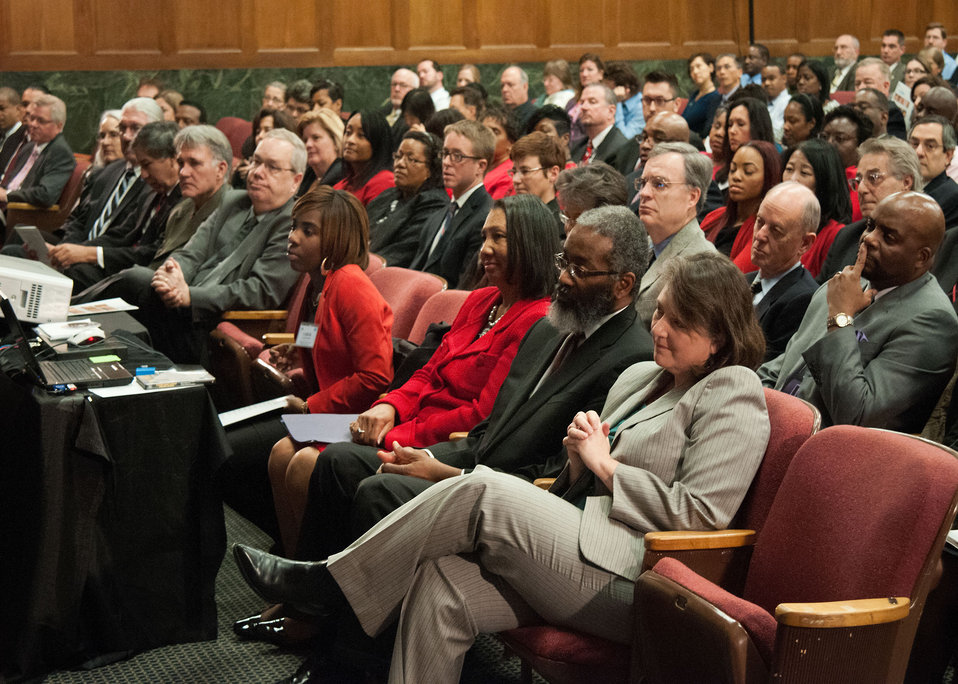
(L to R) Agriculture Associate Assistant Secretary for Administration Dr. Alma Hobbs, Agriculture Deputy Secretary Dr. Kathleen Merrigan, and Agriculture Acting Assistant Secretary for Administration Dr. Gregory Parham listen to Agriculture Secretary Tom Vilsack address employees at the U.S. Department of Agriculture’s (USDA) Fourth Annual Cultural Transformation event held in Washington, D.C. on Tuesday, Dec. 4, 2012. The theme for the event “Faces of Cultural Transformation” Focusing on changing the way we serve our customers and cultural transformation’s benefits to employees. Secretary Vilsack spoke of the progress made during his administration’s tenure at the department and how USDA is cited as a positive example of cultural transformation in the workplace.